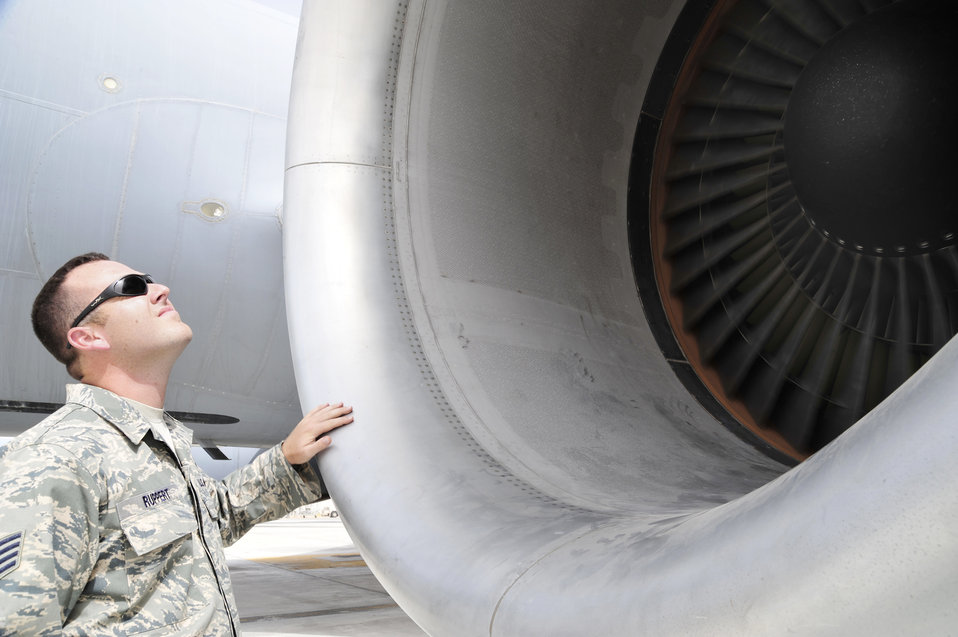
Checking it twice

Staff Sgt. Michael Ruppert inspects the rivets around a KC-10 Extender engine inlet during an inspection Oct. 6, 2009, at an air base in Southwest Asia. Sergeant Ruppert evaluated a prevention inspection completed earlier by an aircraft maintenance technician. Sergeant Ruppert is assigned to the 380th Expeditionary Maintenance Group, and deployed from McGuire Air Force Base, N.J.